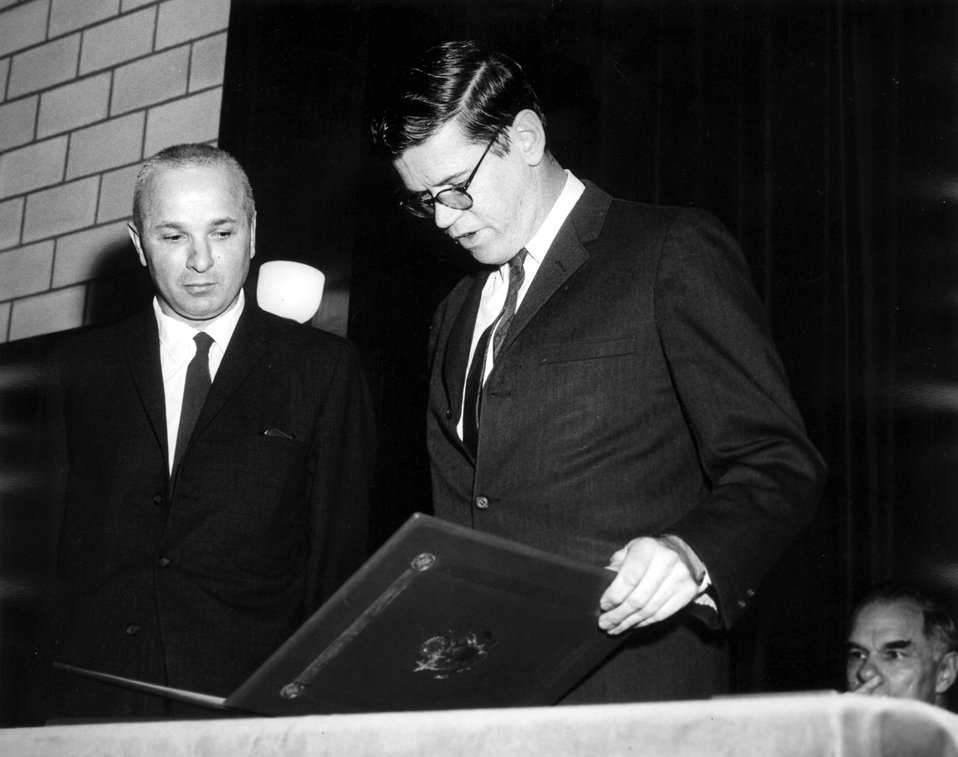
Lawrence Award, 1966.